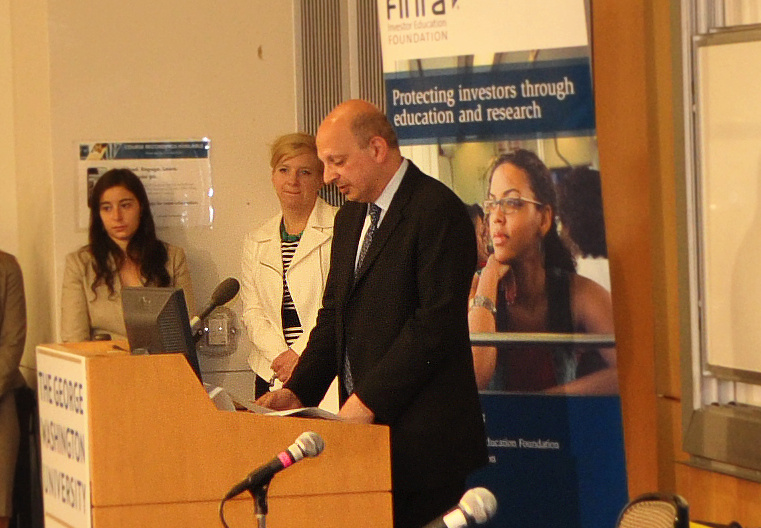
Assistant Secretary for Financial Institutions Amir-Mokri speaks about Treasury’s commitment to financial capability

May 29, 2013 -- Assistant Secretary for Financial Institutions Cyrus Amir-Mokri delivers remarks at an event marking the release of the Financial Industry Regulatory Authority’s (FINRA) National Financial Capability Study at the George Washington University.